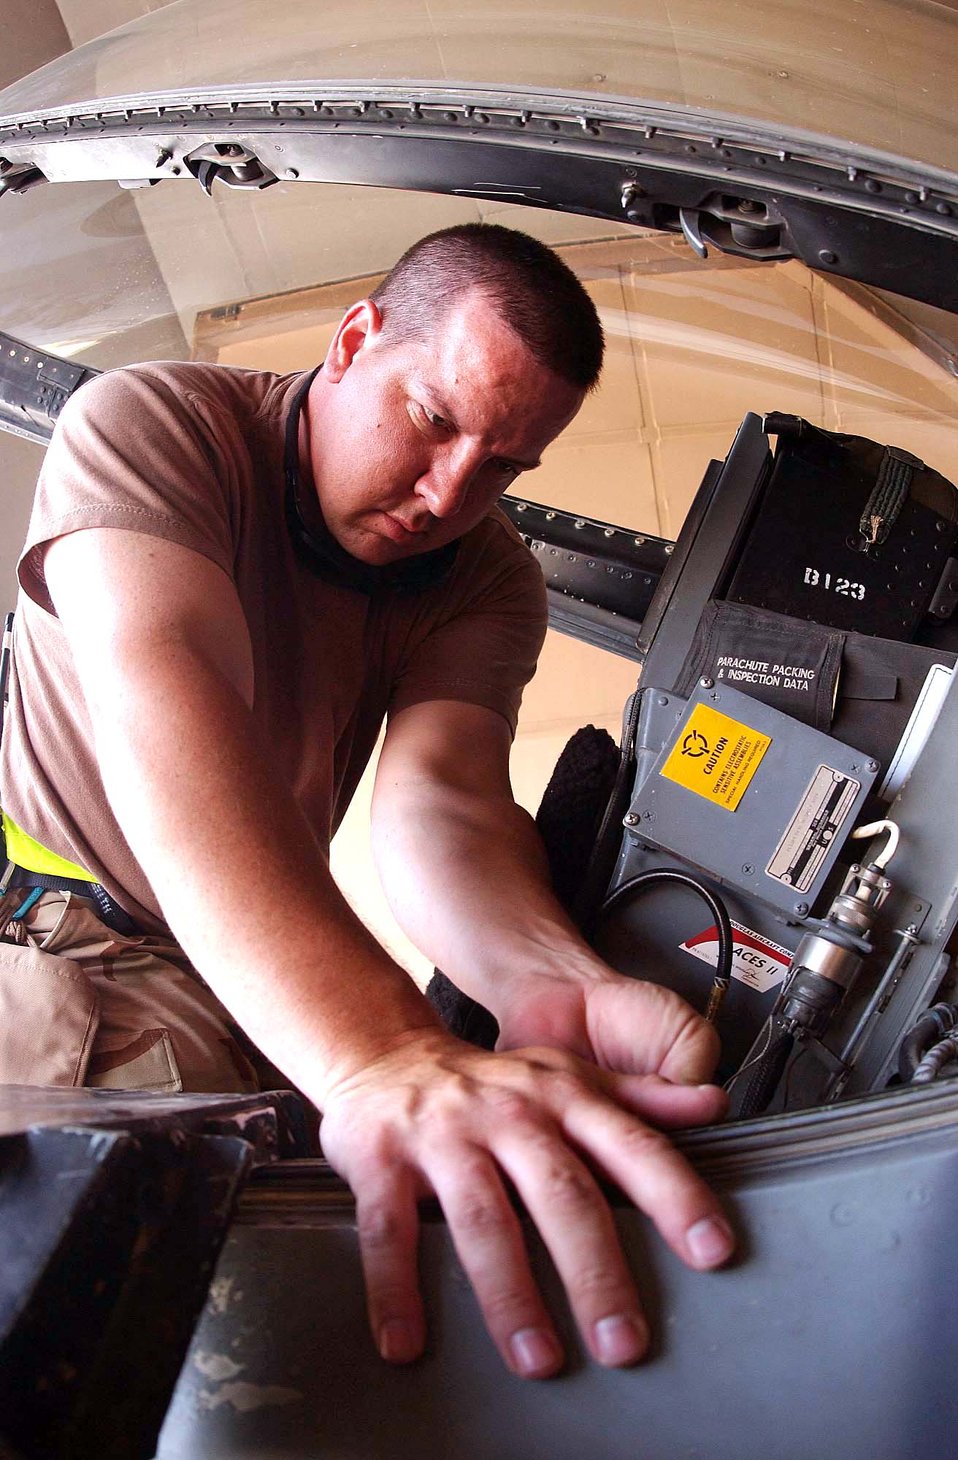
F-16 maintainers make sure curtain gets raised

BALAD AIR BASE, Iraq -- Tech. Sgt. Brad Smith conducts a final inspection on hook lever bolts along the sides of an F-16 Fighting Falcon cockpit. If a pilot must eject, the bolts break off, releasing the canopy. Sergeant Smith is the 510th Aircraft Maintenance Unit's aircrew egress supervisor here.